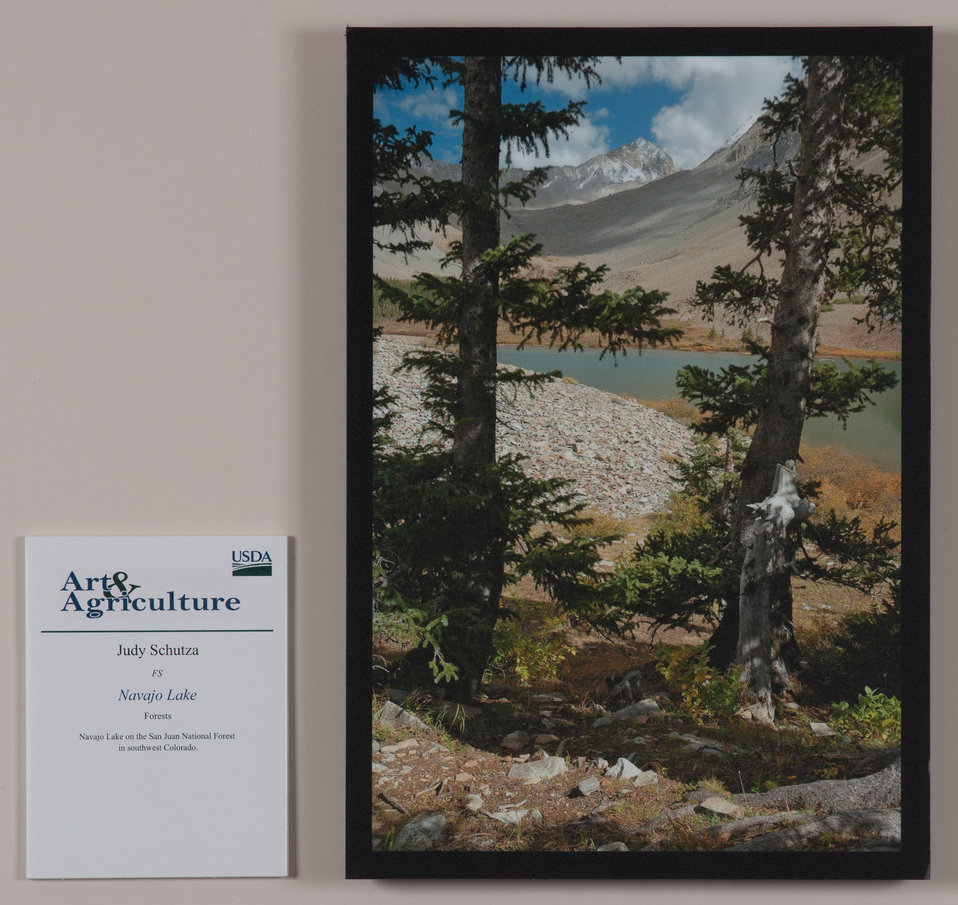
Online Viewer's Choice entries of the 2013 Art & Agriculture, Tuesday, July 9, 2013, in the South Building, Washington, D.C. Themes were expressed by employees from across the department and the contest was open to full-time and part-time USDA employees. Winning artwork will be displayed till the end of the year. U.S. Artistic expression is a creative outlet that is vital for an individual to grow and develop.